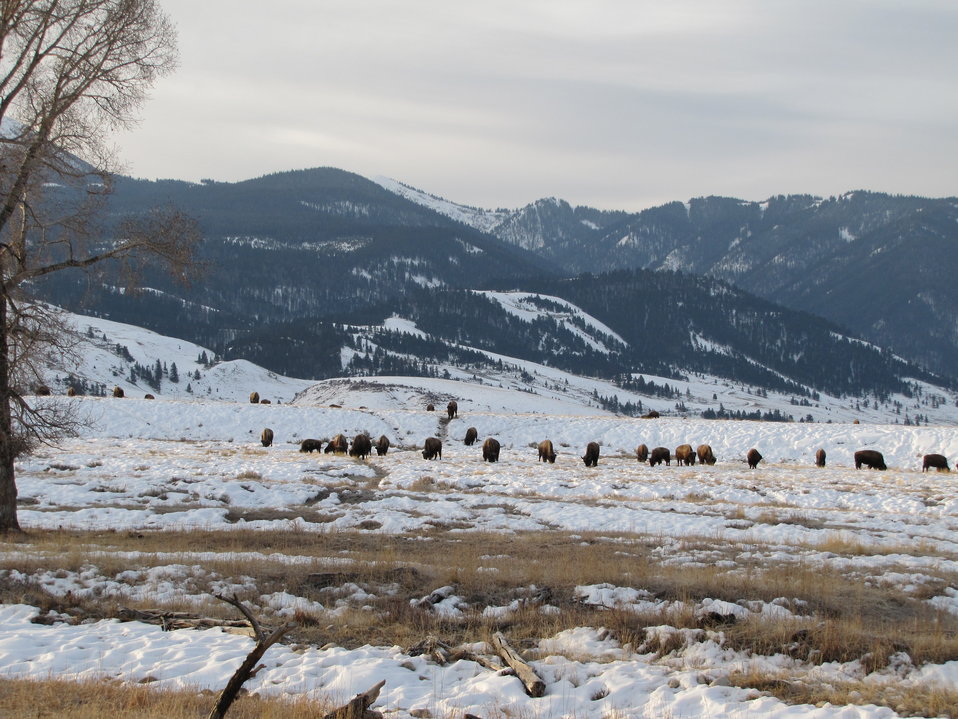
Bison on the National Elk Refuge

The Jackson bison herd has grown to over 1,000 animals and, since 1990, has on average increased about 10% to14% each year. In February 2013, approximately 830 bison were counted in the pirmary management areas of the National Elk Refuge.